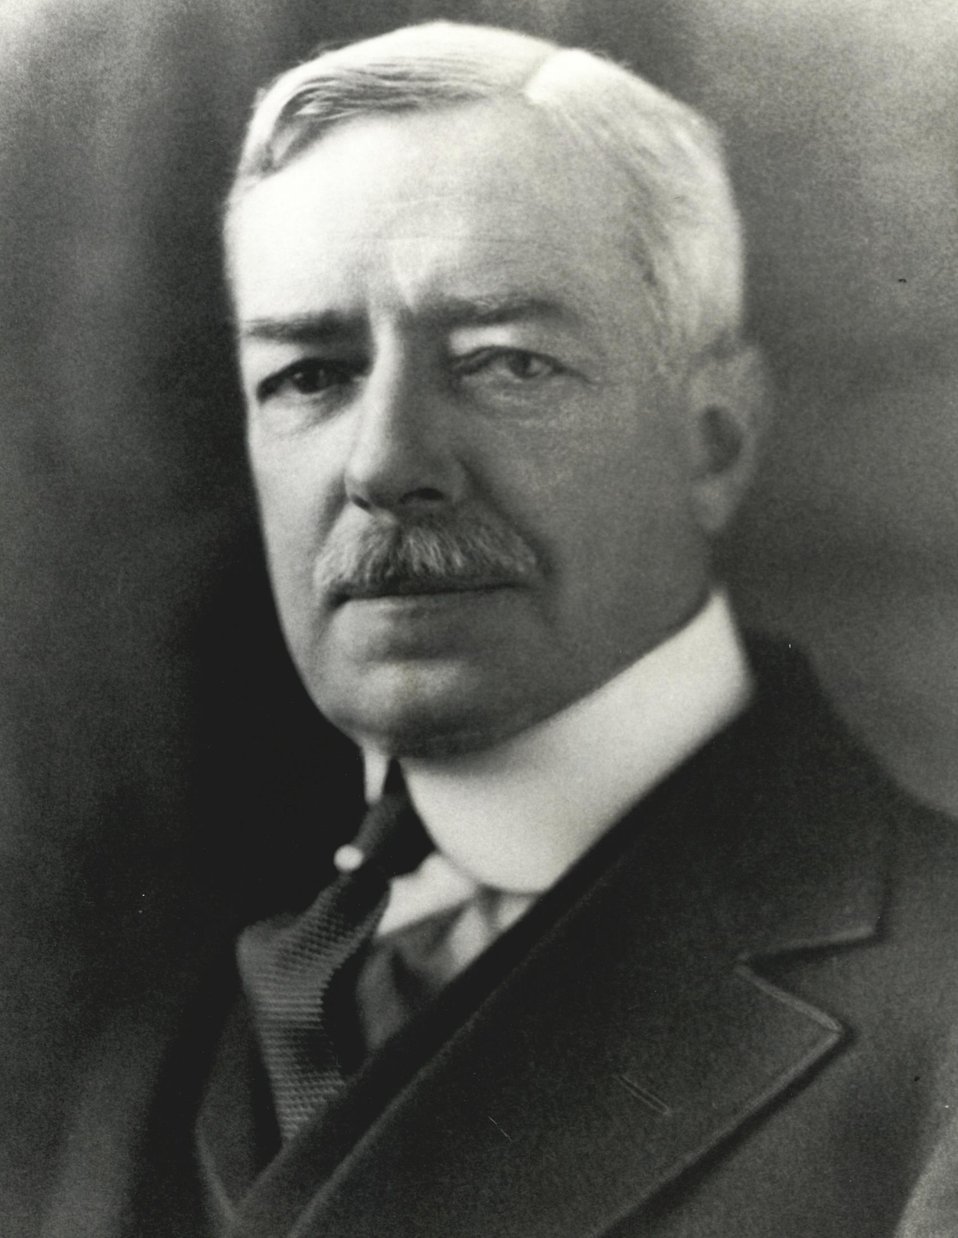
Robert Lansing, U.S. Secretary of State, June 24, 1915 to February 13, 1920